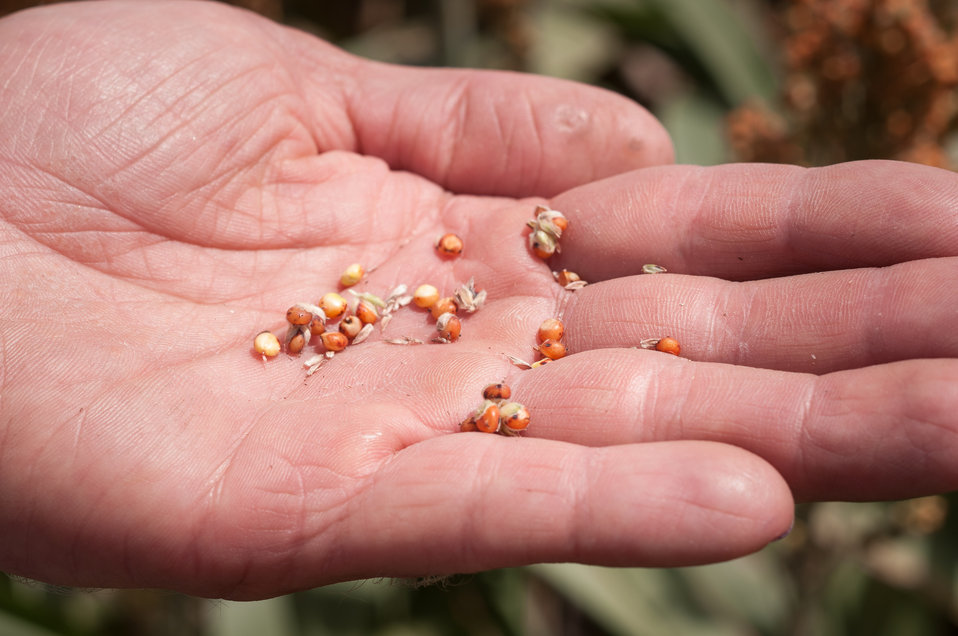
Michael Popp (pronounced Pope) shows the milo (grain sorghum) grown at Popp Farms 05 in El Campo, TX on Jun. 20, 2013. Michael is a junior partner in the 2,400-acre operation that also grows cotton. The farms are part of the United Agricultural Cooperative, Incorporated.